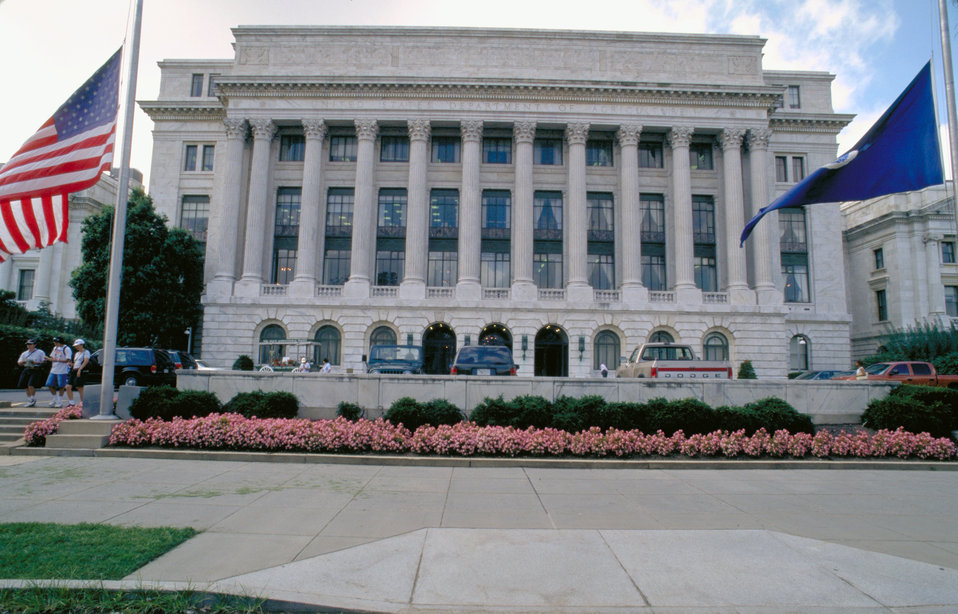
The Jamie L. Whitten, Federal Building, U.S. Department of Agriculture in Washington, D.C.